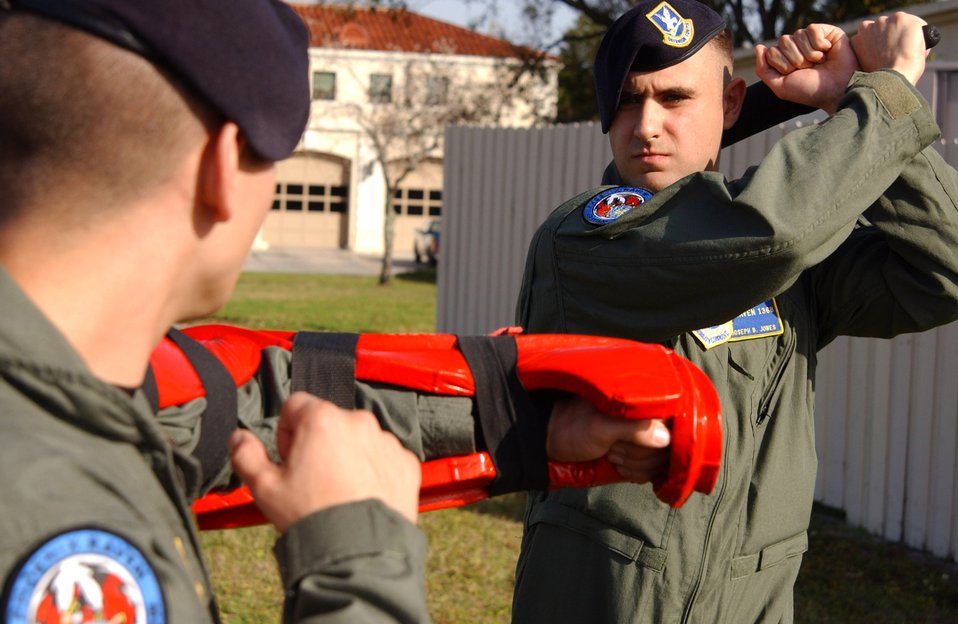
6 SFS PHOENIX RAVENS

MACDILL AIR FORCE BASE, Fla. (AFPN) -- Airman 1st Class Joseph Jones (right) and Senior Airman William Lepionka do tactical baton training Jan. 11. The Airmen are with the 6th Security Forces Squadron's Phoenix Ravens. Ravens are specially trained to detect, deter and counter threats with the least amount of force necessary.